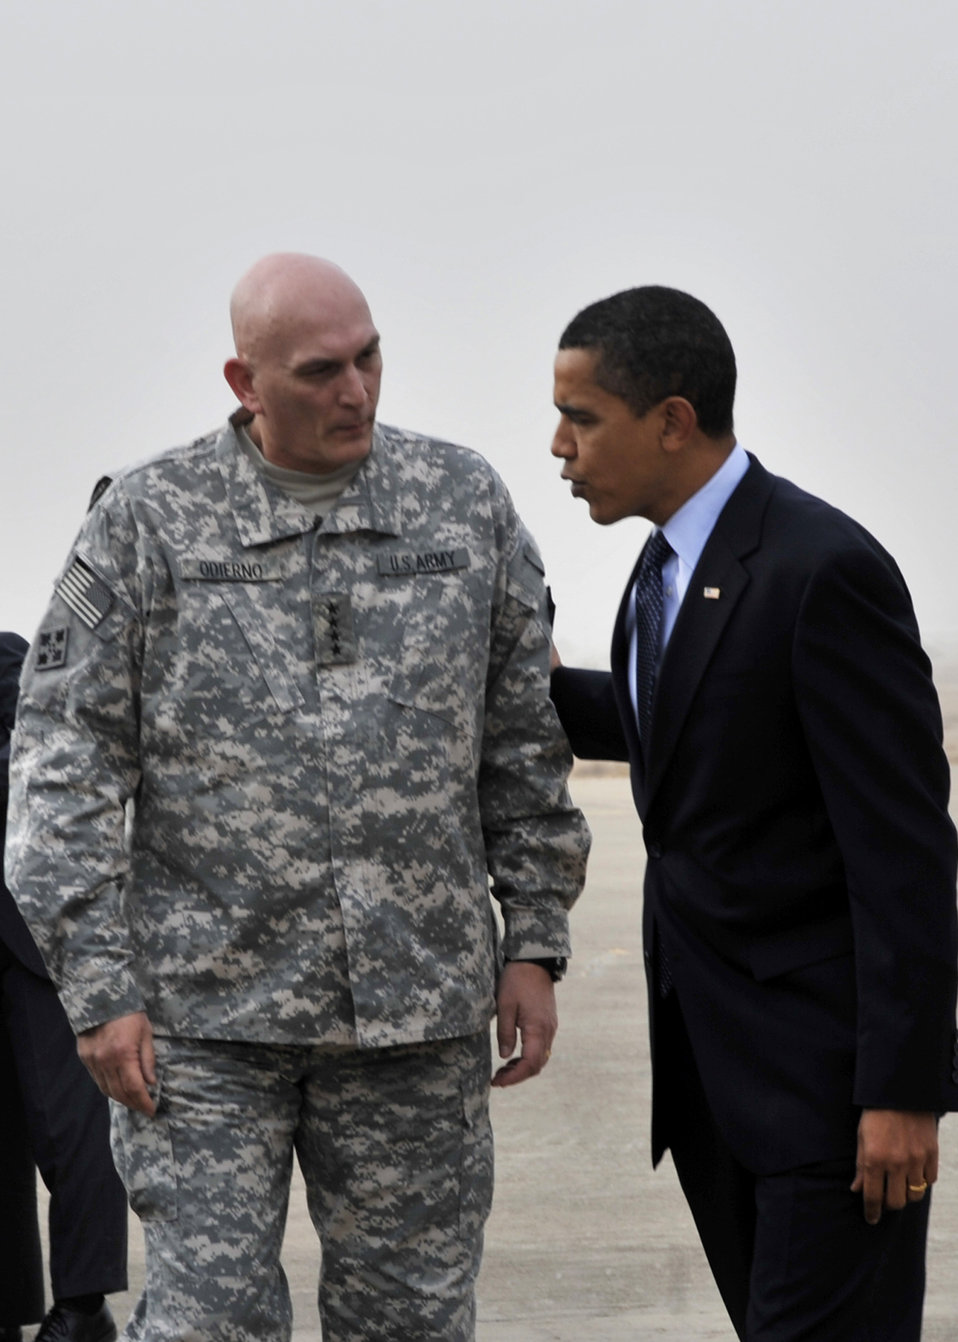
President Obama visits Sather

President Barack Obama speaks with Army Gen. Ray Odierno just after landing in Air Force One on the flightline April 7 at Sather Air Base, Iraq. Shortly after arriving, the president addressed a crowd of nearly 1,500 servicemembers, government civilians and contractors at Al Faw Palace, Camp Victory, Iraq. During his speech, the president commended servicemembers for their focus and dedication and promised them his support while in office. The visit marked the president's first trip to Iraq since taking office. General Odierno is the Multinational Forces-Iraq commanding general.